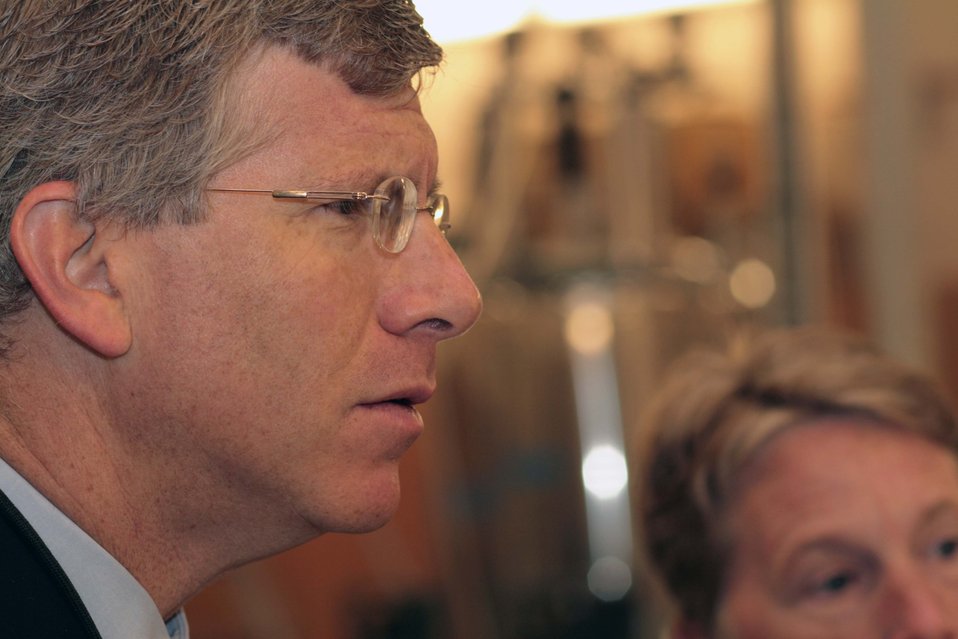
P-15